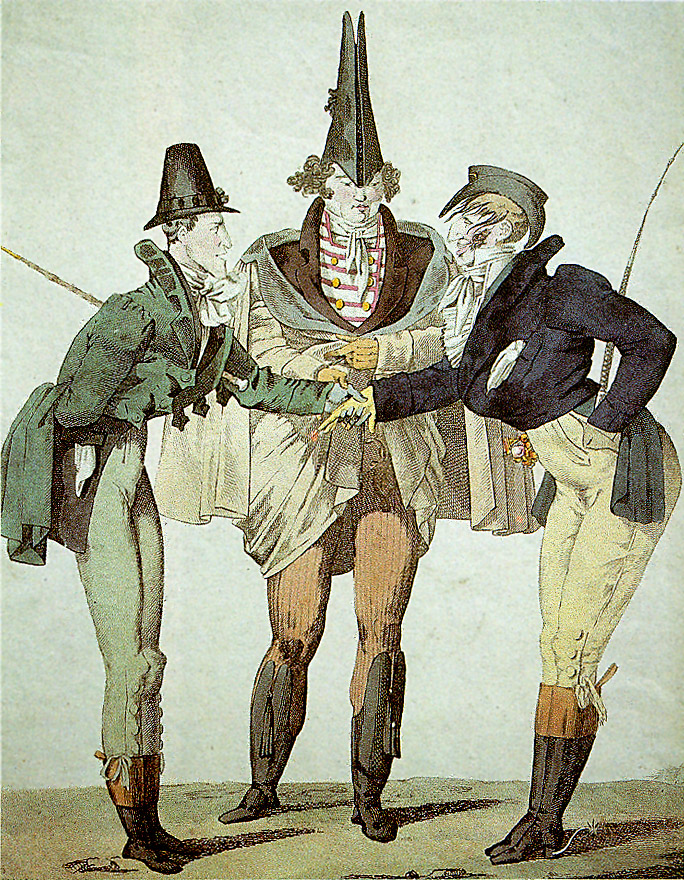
1810-Les-Modernes-Incroyables